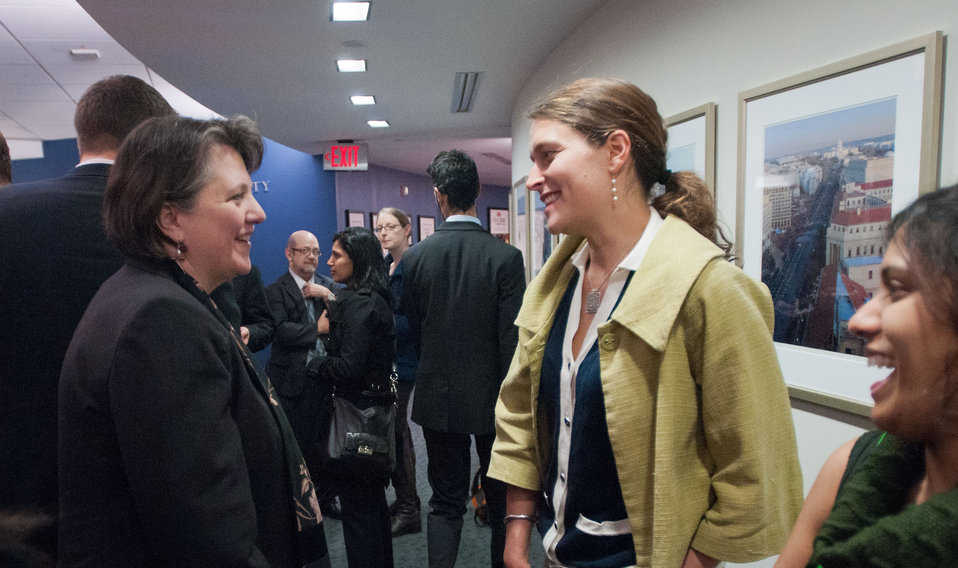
(Right to left) American University Graduate Student Sonia Saini and American University School of International Service Global Environment Politics Assistant Professor Garrett Graddy talked with Agriculture Deputy Secretary Kathleen Merrigan, during the reception that followed the “Shaping the Farm Bill for a Sustainable Future” Forum in the Jack Morton Auditorium, at the Trachtenberg School of Public Policy and Public Administration, on the George Washington University campus in Washington, D.C., on Thursday, March 1, 2012.